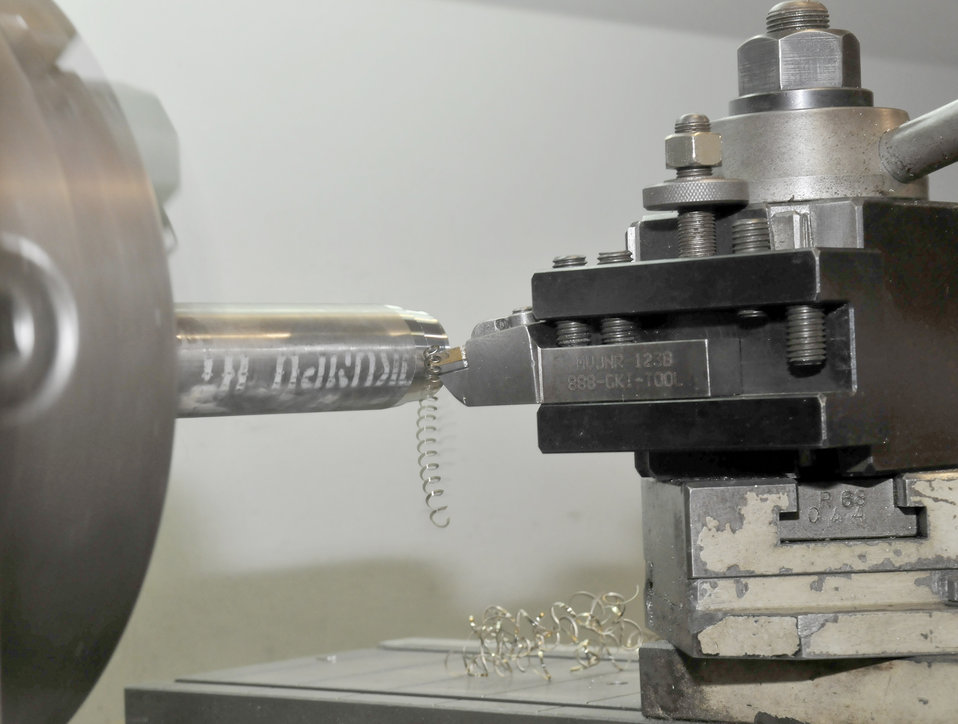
Metals technology

The metal lathe used at the 332nd Maintenance Squadron metals technology flight is able to turn and cut any piece of metal a technician can place in its three-jaw chuck. The lathe uses dies that are made out of hardened metals, such as tungsten carbide, and it can cut a piece of metal to an accuracy of a 1,000th of an inch.